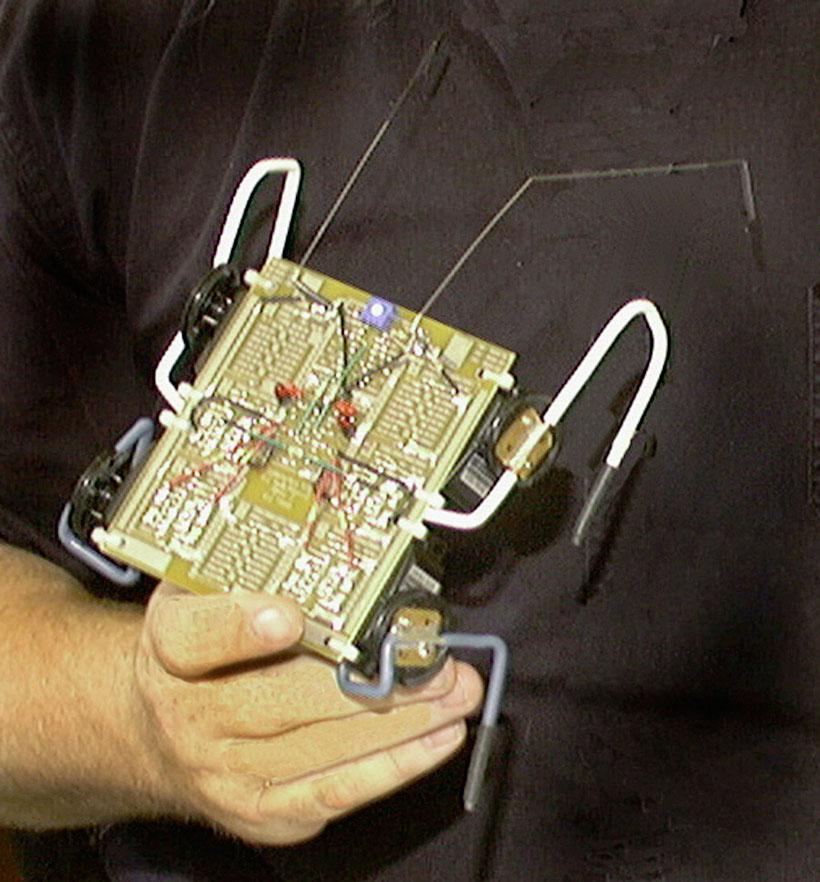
BEAM, WHICH STANDS FOR BIOLOGY, ELECTRONICS, AESTHETICS AND MECHANICS, REFERS TO THE APPROACH TO ROBOTICS PIONEERED BY BEAM FOUNDER, LANL SCIENTIST MARK TILDEN. BEAM ROBOTS ARE MODELED MORE ON THE SIMPLE, REPETITIVE BIOLOGICAL PROCESSES OF INSECTS THAN THE COMPLEX, HUMAN-LIKE OPERATIONS THAT ARE THE GOAL OF TRADITIONAL ROBOTS.